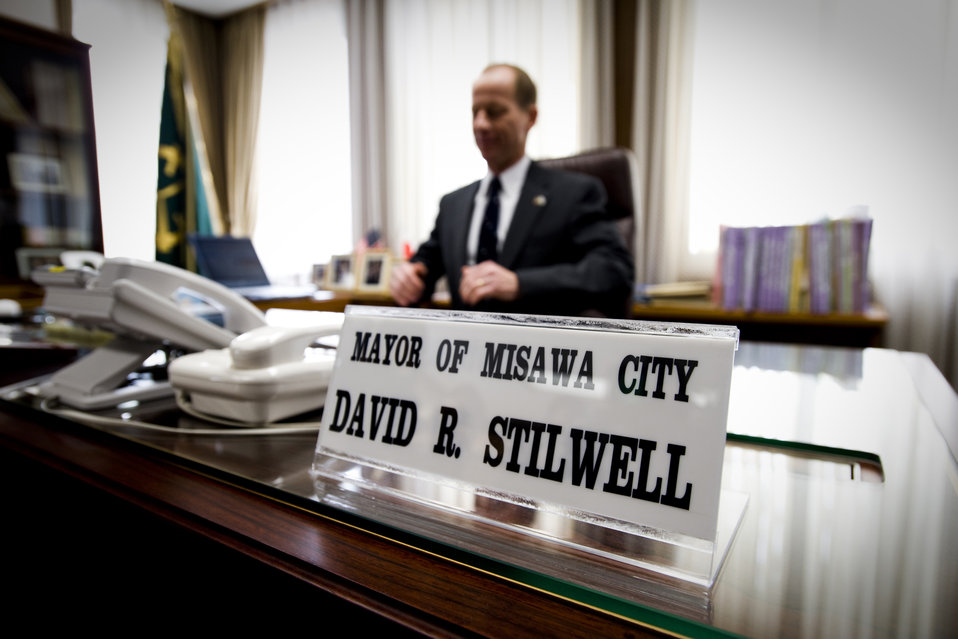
Mayor for a day

Col. David Stilwell, 35th Fighter Wing commander at Misawa Air Base, Japan, and honorary Mayor of Misawa City, sits in the mayor's chair March 23, 2010, during the Misawa Mayor for a Day event. As the honorary mayor, Colonel Stilwell reviewed and approved a staff report, toured the departments of Misawa City Hall and attended a senior-staff meeting with officials from the city.